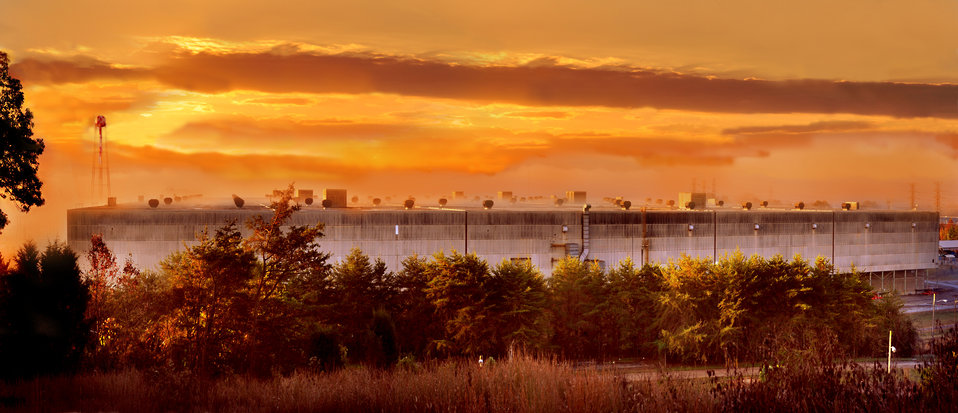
K-33 Sunrise ETTP Oak Ridge

DOE photo Lynn Freeny

K-33 Sunrise ETTP East Tennessee Technology Park Oak Ridge Tennessee 2010